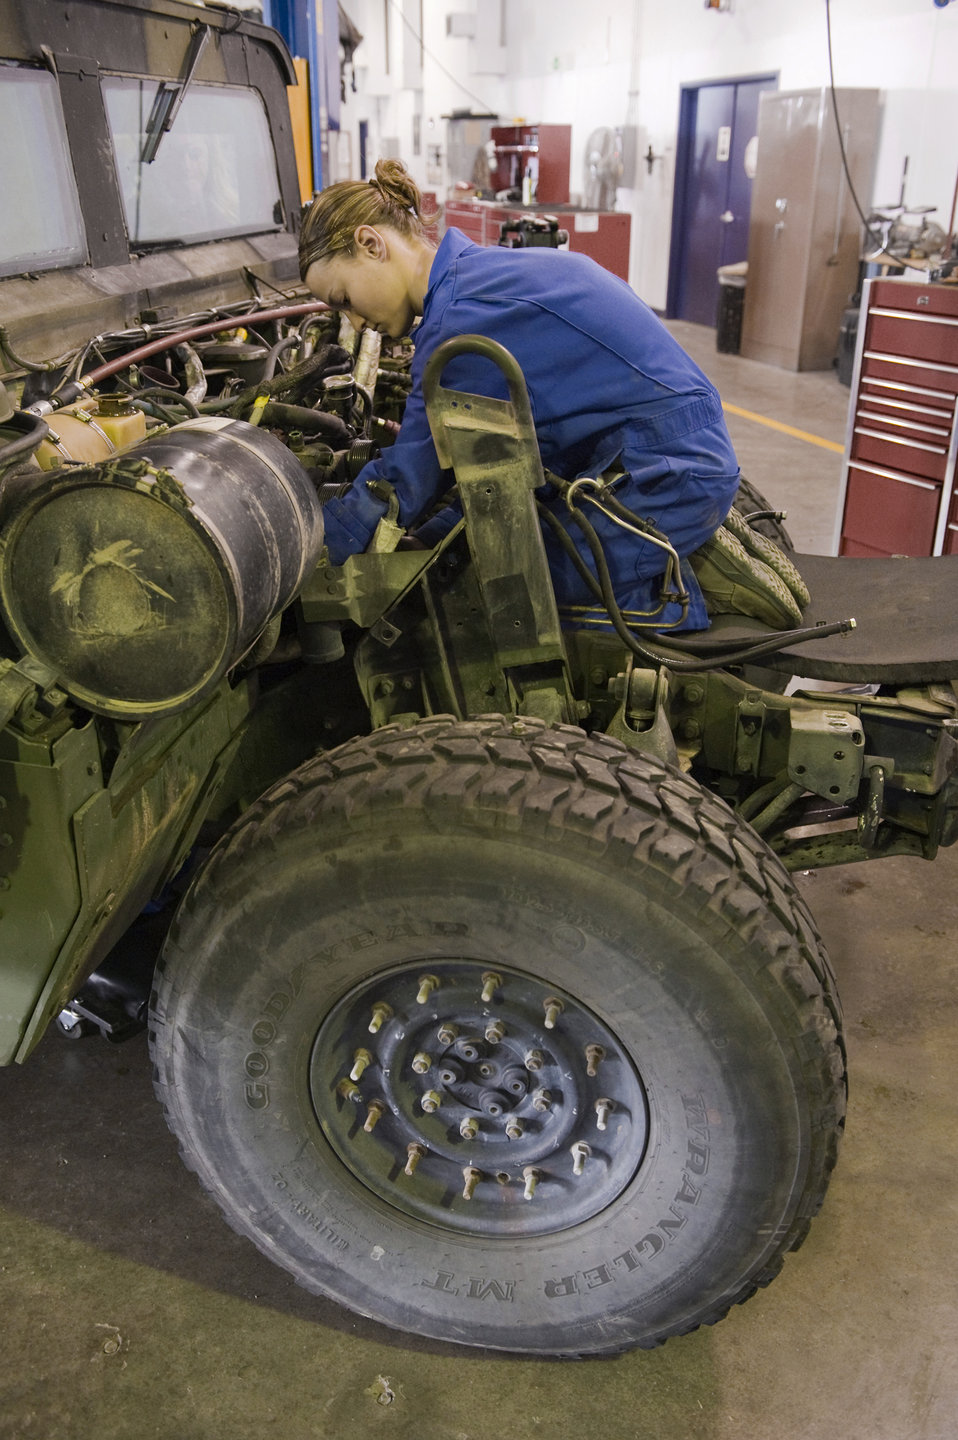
All in a day's work

Airman 1st Class Stephanie Shelton, a 341st Logistics Readiness Squadron vehicle mechanic, removes an engine from a Humvee June 10, 2010, at Malmstrom Air Force Base, Mont.